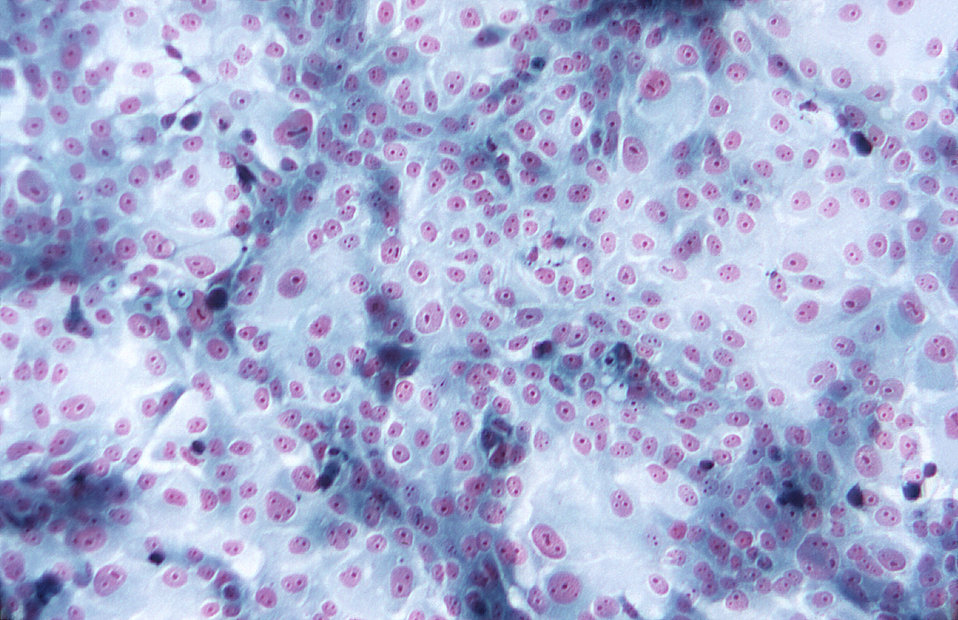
This photomicrograph revealed some of the normal cytoarchitectural morphology found in a section of meningeal tissue.